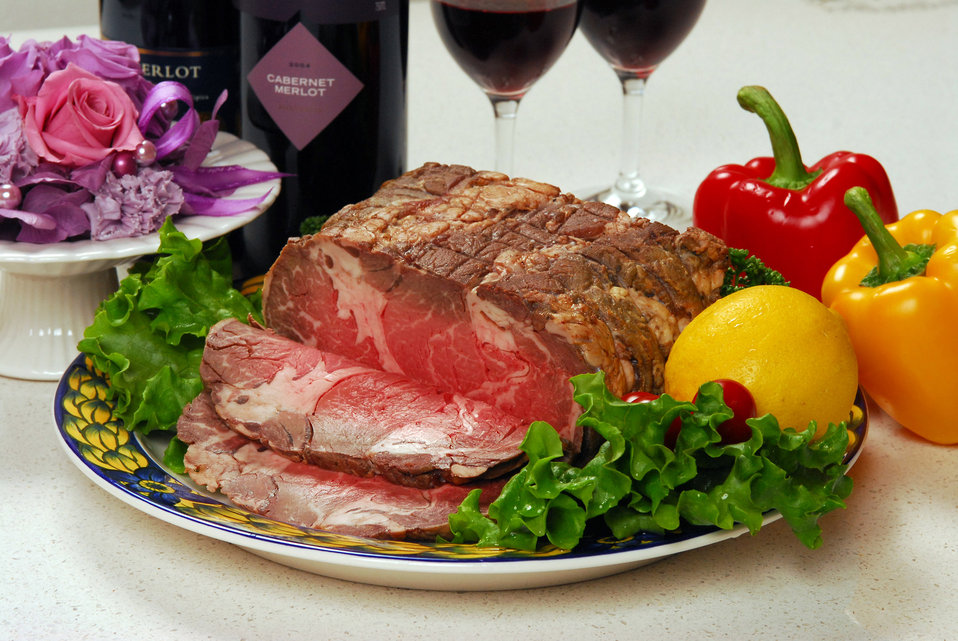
A chunk of beef 4

A chunk of beef.